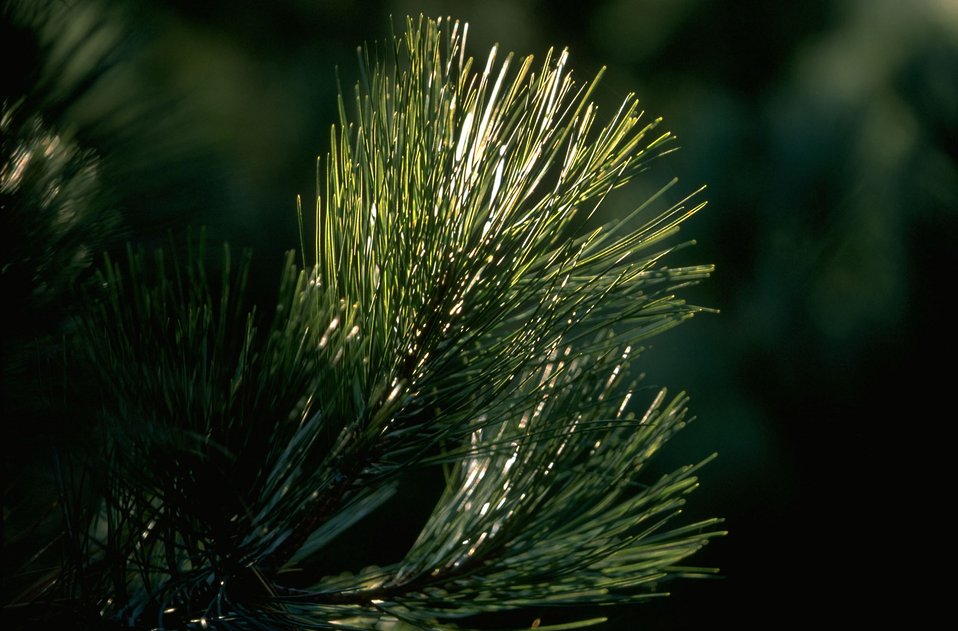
Ponderosa pine close up of needles